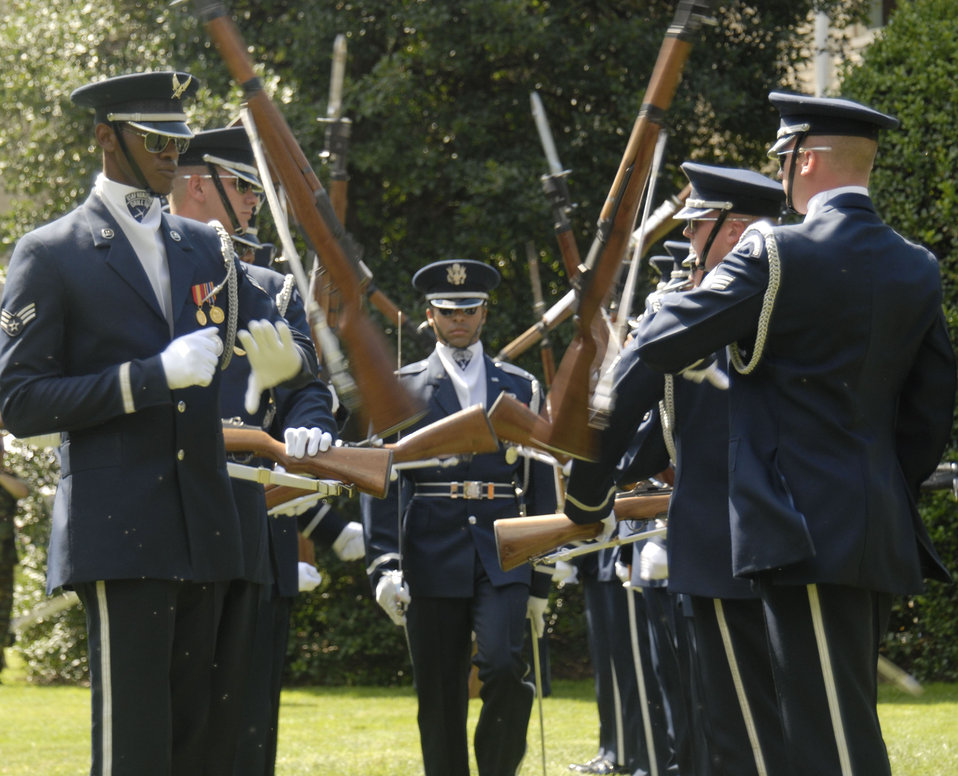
Air Force celebrates 60th anniversary

Capt. Joshua Hawkins walks through the formation as the Air Force Honor Guard Drill Team members perform at the Air Force 60th anniversary celebration in the Pentagon courtyard Sept. 18. Captain Hawkins is the Air Force Honor Guard Drill Team commander.